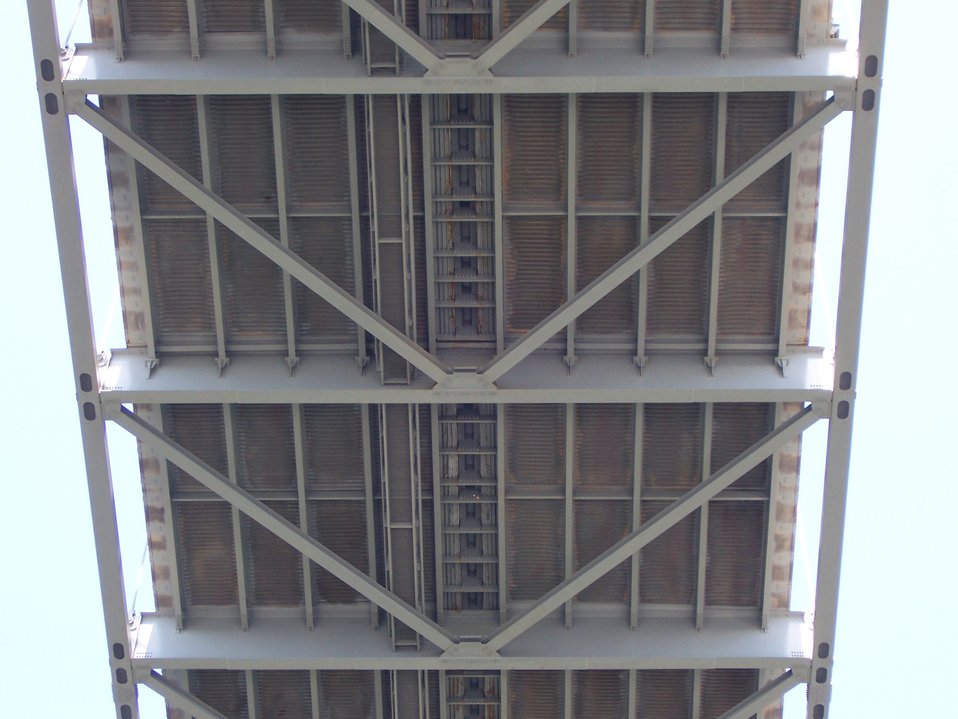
Looking up to the bottom of the Francis Scott Key Bridge.